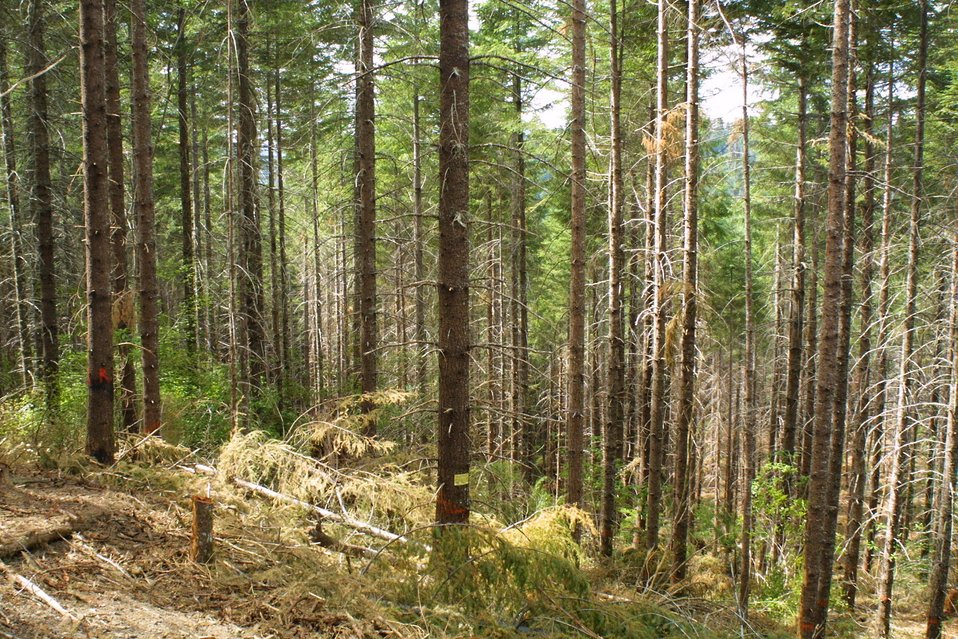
Camas East Timber Sale in Late Successional Reserve.